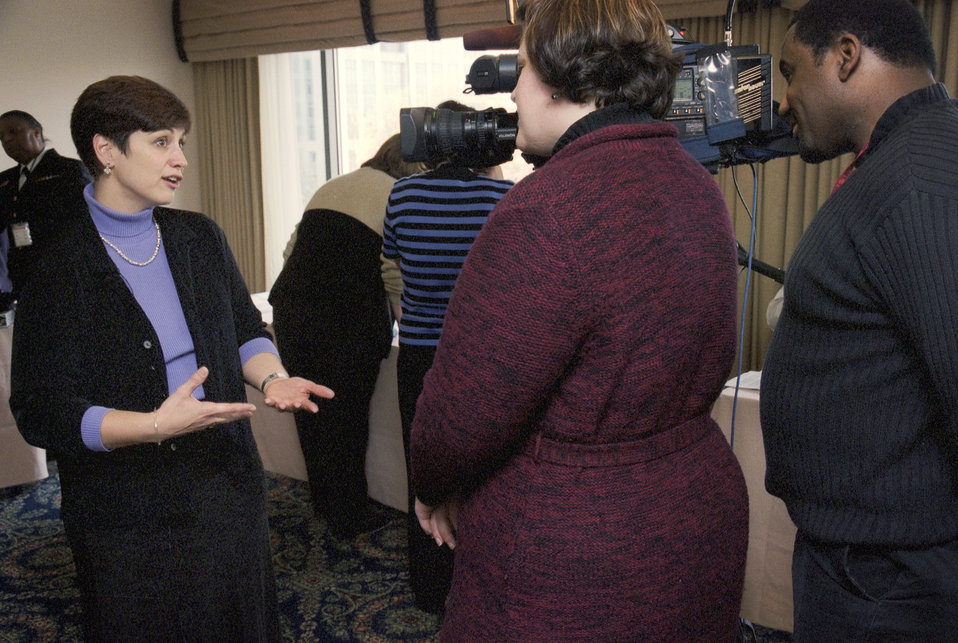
CDC Clinician, Joanne Cono, MD, is being interviewed by a television news team during the 2002 Smallpox Vaccinator Workshop.